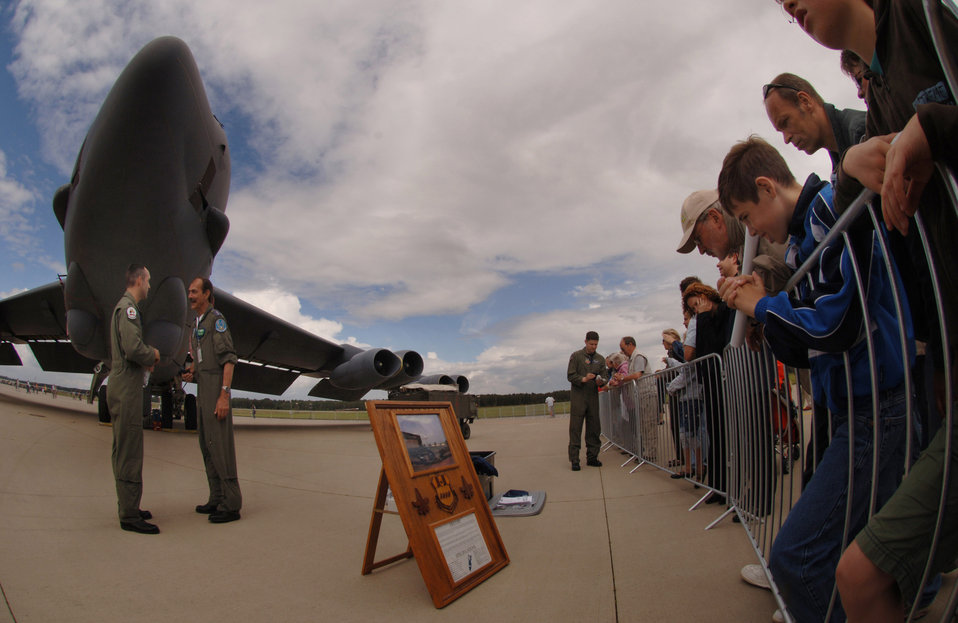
NATO celebrates 25th anniversary of E-3's arrival

A B-52 Stratofortress from the 20th Bomb Squadron at Barksdale Air Force Base, La., stands on display at a 25th anniversary celebration of the E-3 NATO AWACS initial operations June 16 at Geilenkirchen NATO Air Base in northern Germany. On hand to field questions about the 47-year-old bomber was Capt. David Isakson, the aircraft commander, (left) and 1st Lt. John Stephens, a radar navigator.